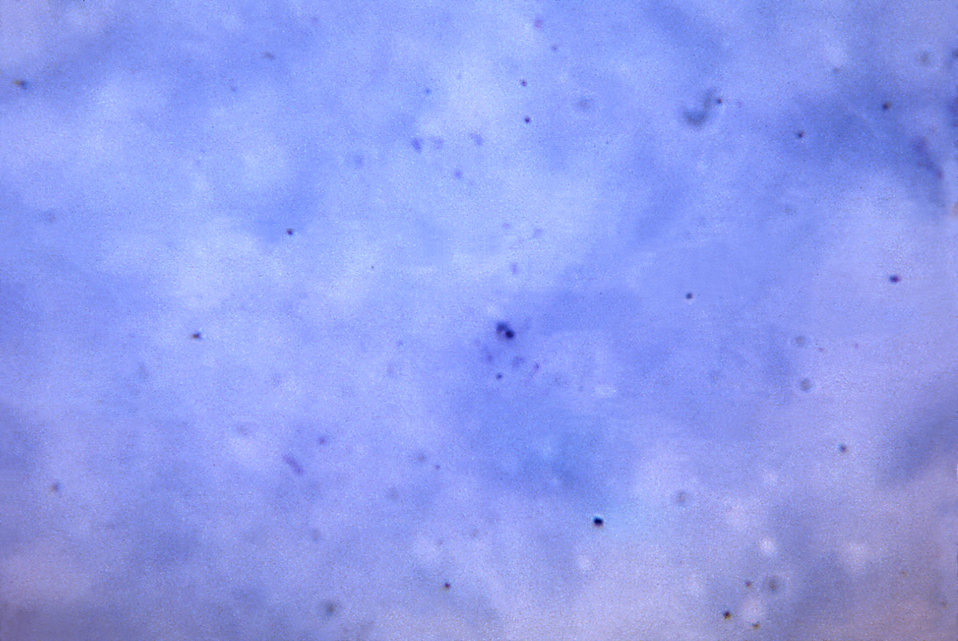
This thick film micrograph depicts a compact ring form Plasmodium vivax trophozoite with no Sch�'s dots; Mag. 1125X.